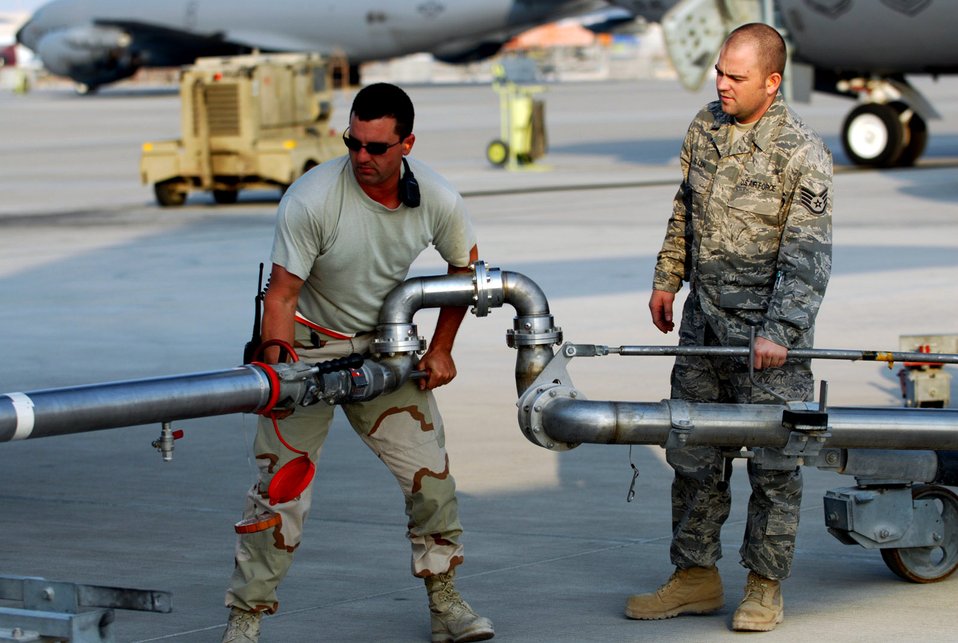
It's a gas

Staff Sgt. Brian McCaslin (left) and Staff Sgt. Mike Allen adjust the pantograph, a pipe system used to refuel a KC-135 Stratotanker, Jan. 5 at a Southwest Asia air base. Both Airmen are with the 379th Expeditionary Logistics Readiness Squadron. Sergeant McCaslin is deployed from Ebbing Air National Guard, Fort Smith Ark., and Sergeant Allen is deployed from Luke Air Force Base, Ariz.